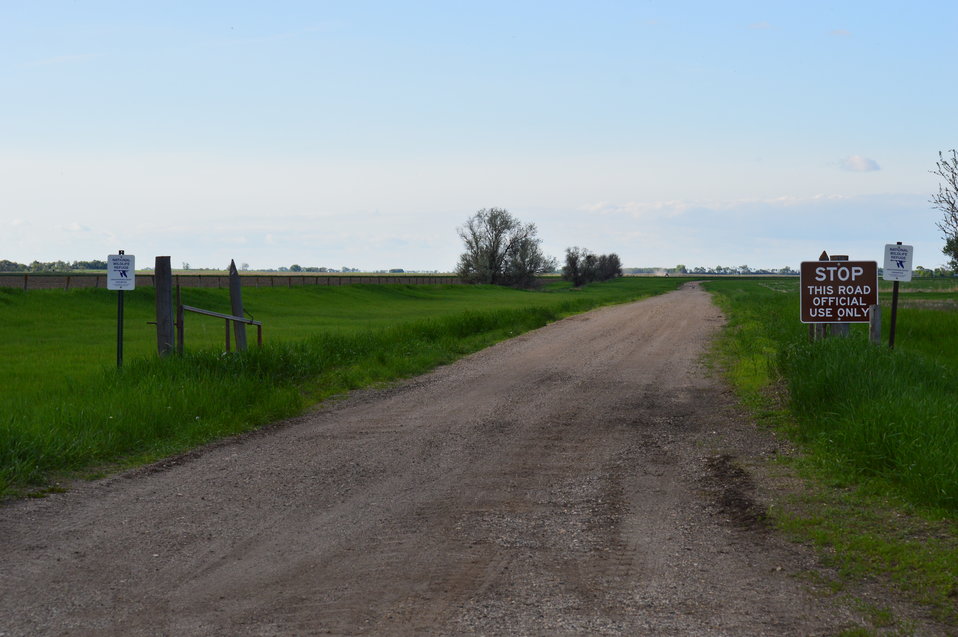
USFWS Road

Scenery and wildlife at Sand Lake National Wildlife Refuge in South Dakota